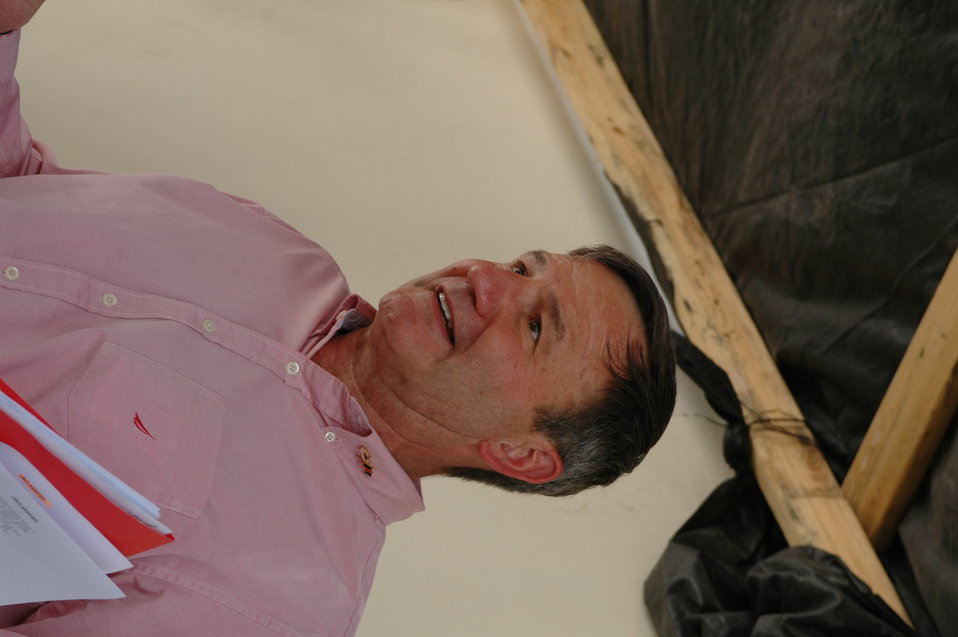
CODEL Berman